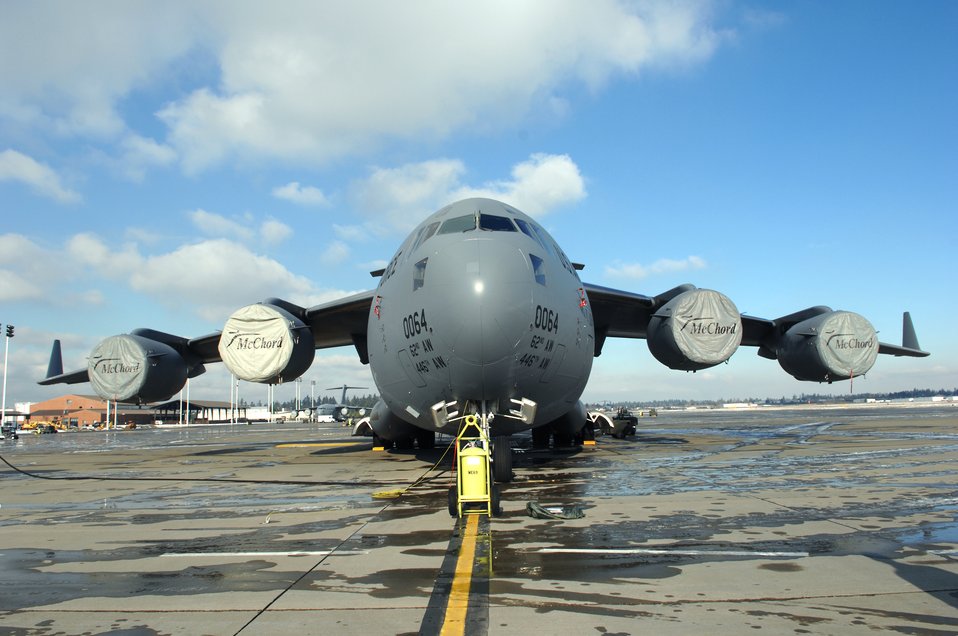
Global reach, global power

A C-17 Globemaster III sits on the fllightline Jan. 12 at McChord Air Force Base, Wash. Each day, hundreds of McChord AFB Airmen support the global airlift mission from locations around the world.